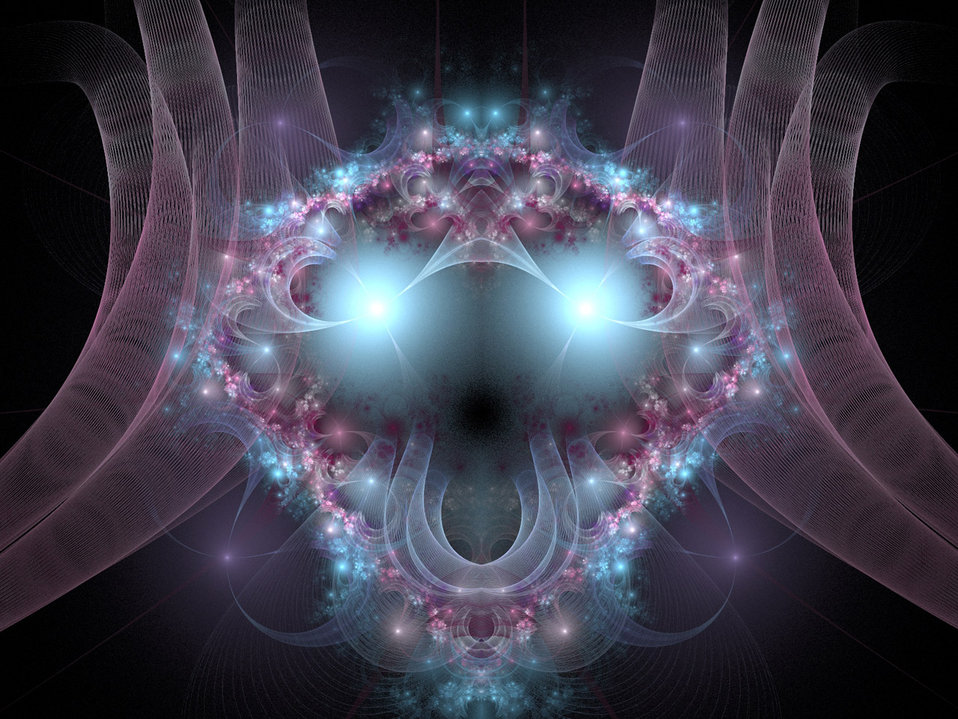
Pink and blue

Fractal in pink and blue shapes.